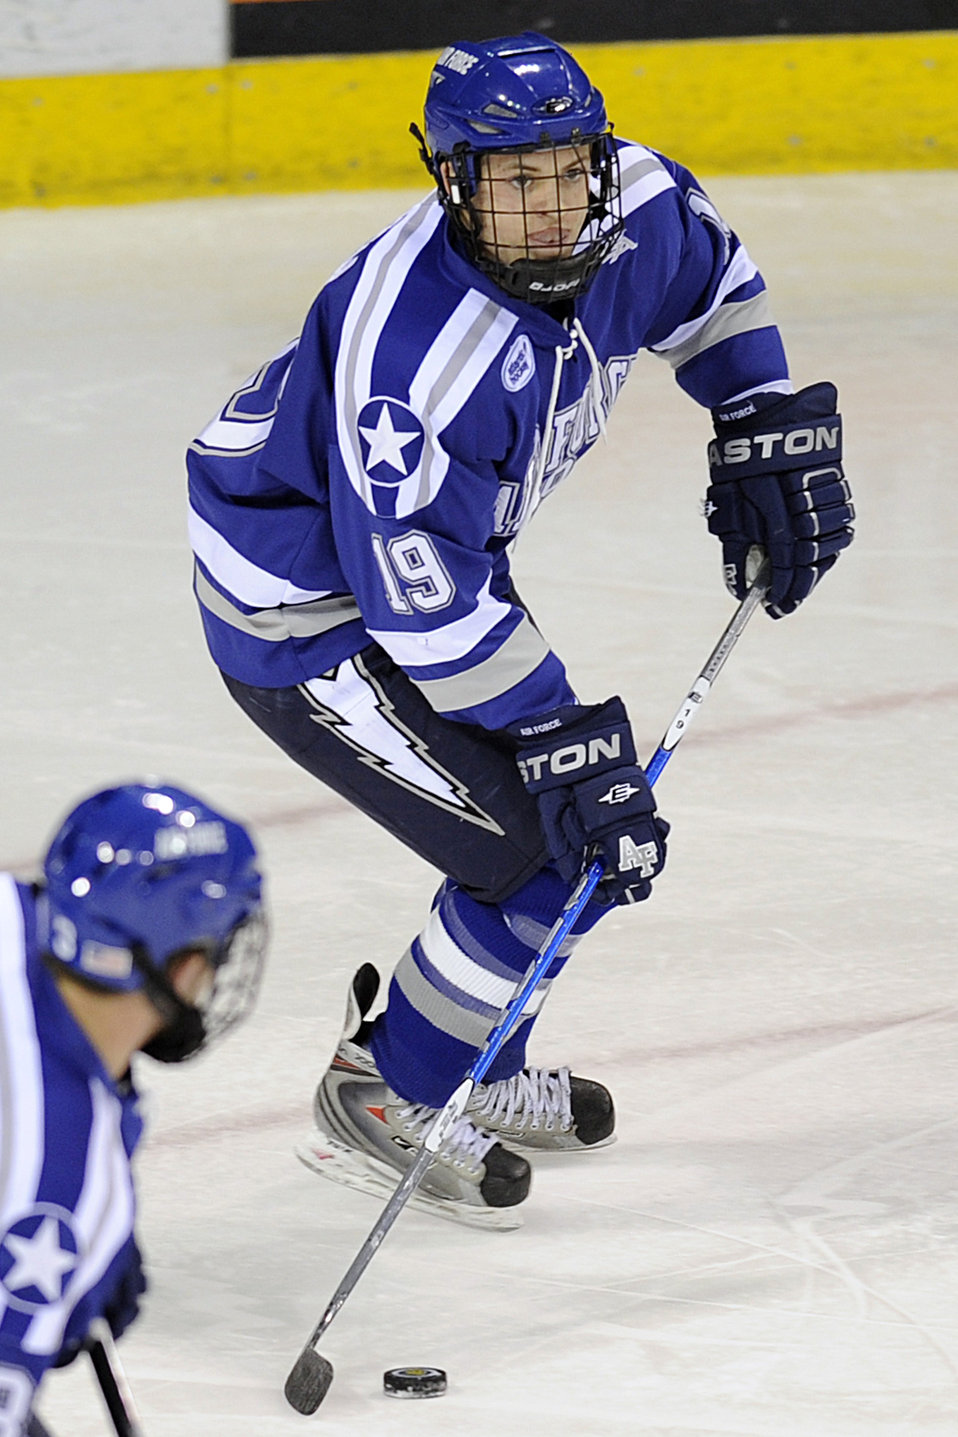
Falcons lose in match with Colorado Tigers

Freshman forward Stephen Carew makes a pass as 10th-ranked Colorado College beat Air Force 2-0 in a non-conference hockey game Feb. 5, 2010, at the World Arena in Colorado Springs, Colo. The U.S. Air Force Academy fell to 12-11-6 overall.